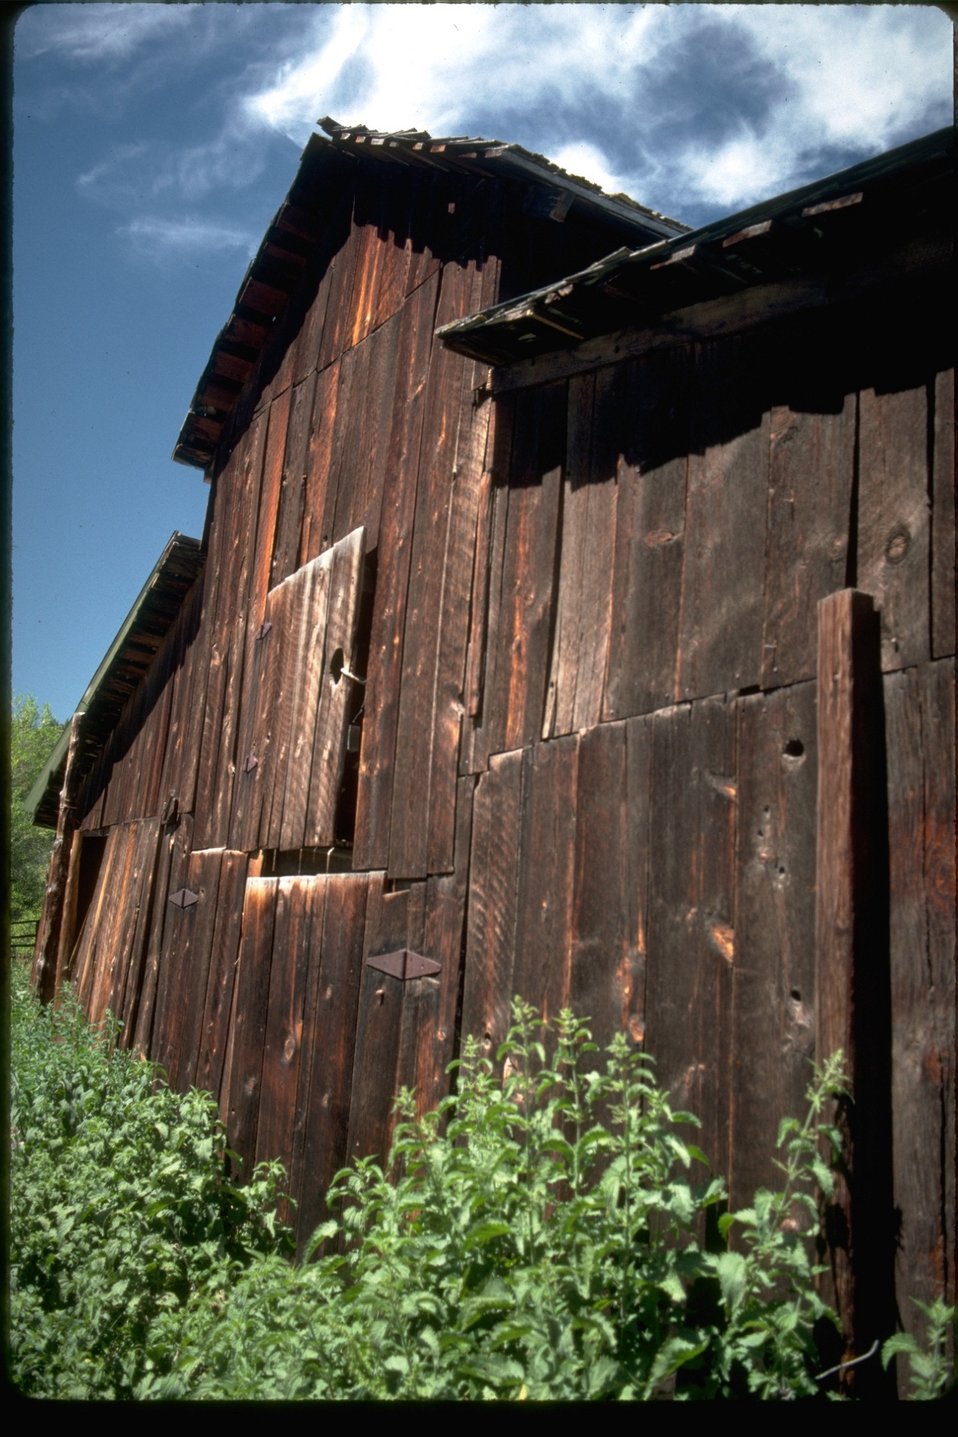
Riddle Brother's Ranch Main Barn on the Riddle Brother's Ranch Historic District in the Steens Mountain Area, Oregon.